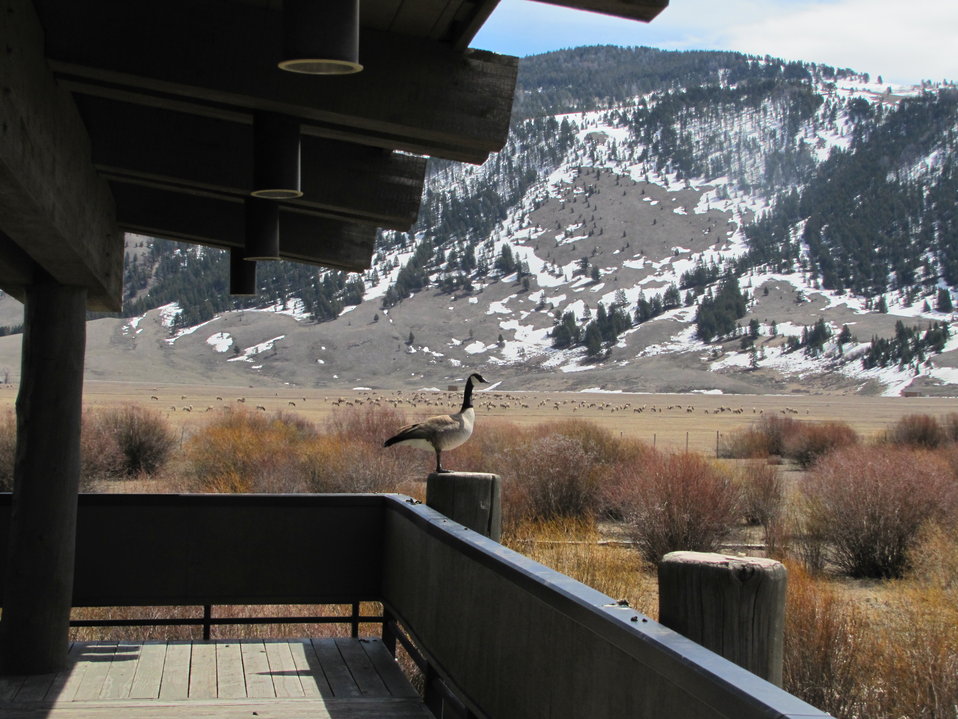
Goose on the Visitor Center's Upper Deck

With elk in the background, a Canada goose surveys the scene from the upper viewing deck of the Jackson Hole & Greater Yellowstone Visitor Center, located on the National Elk Refuge.